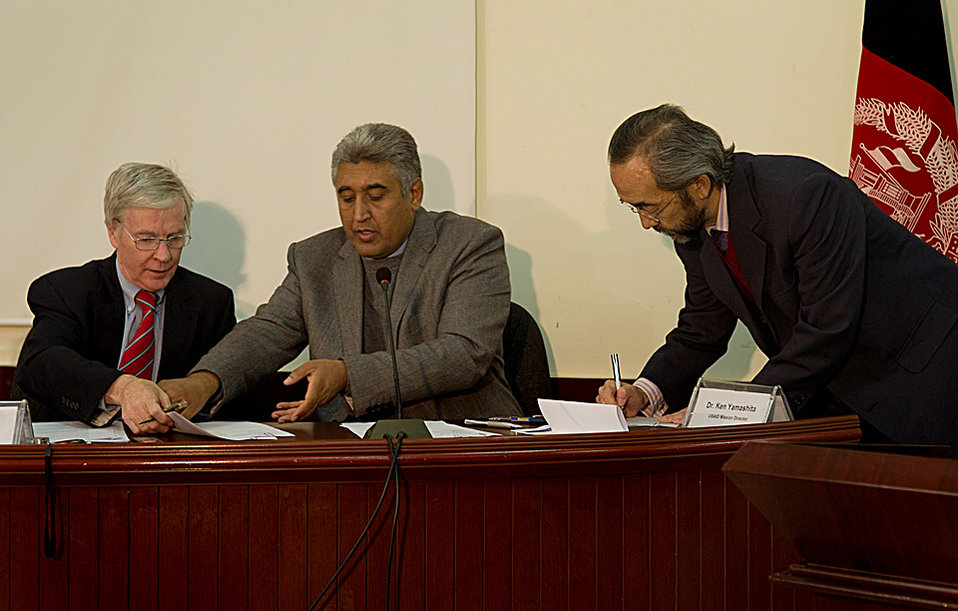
Ambassador Crocker, Minister Ken signing